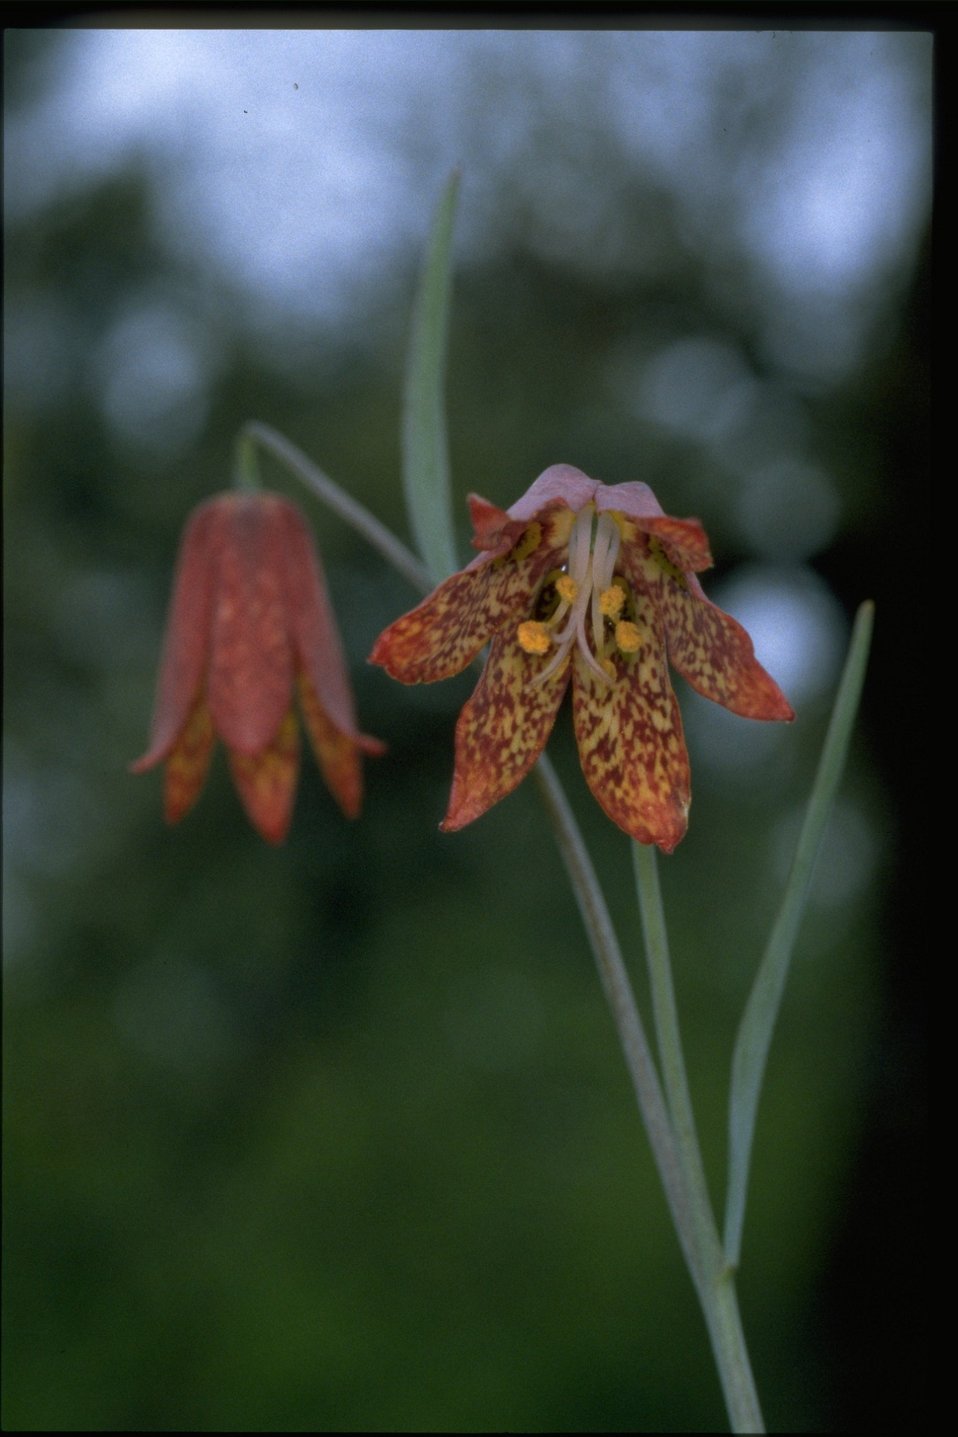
Closeup shot of Gentner's Fritillary.